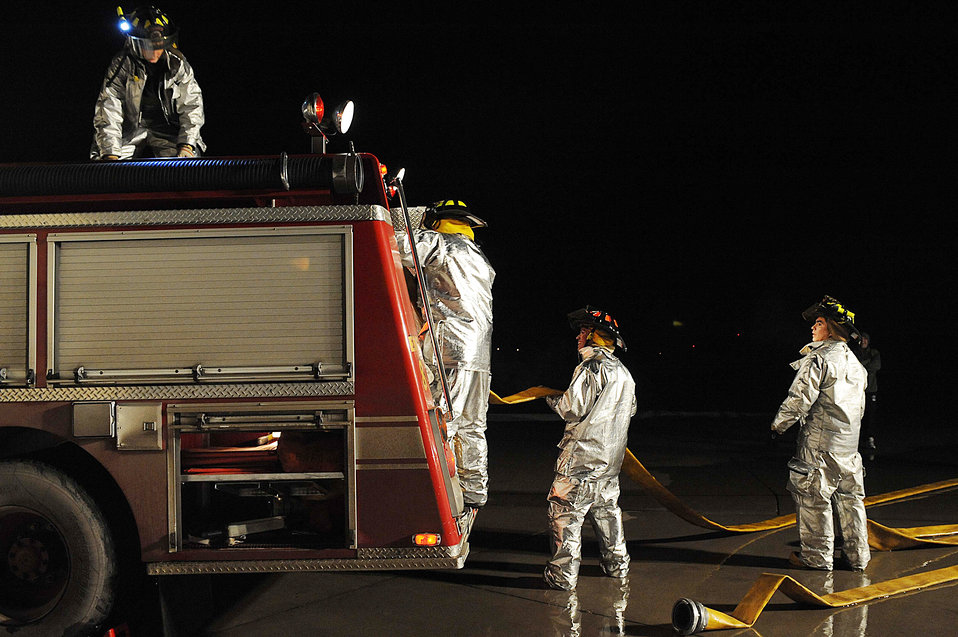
Ellsworth firefighters train at night

Firefighters from the 28th Civil Engineer Squadron roll a hose into a fire truck during a night fire training exercise, Feb. 17, 2010, at Ellsworth Air Force Base, S.D. The exercise allowed them to safely practice extinguishing